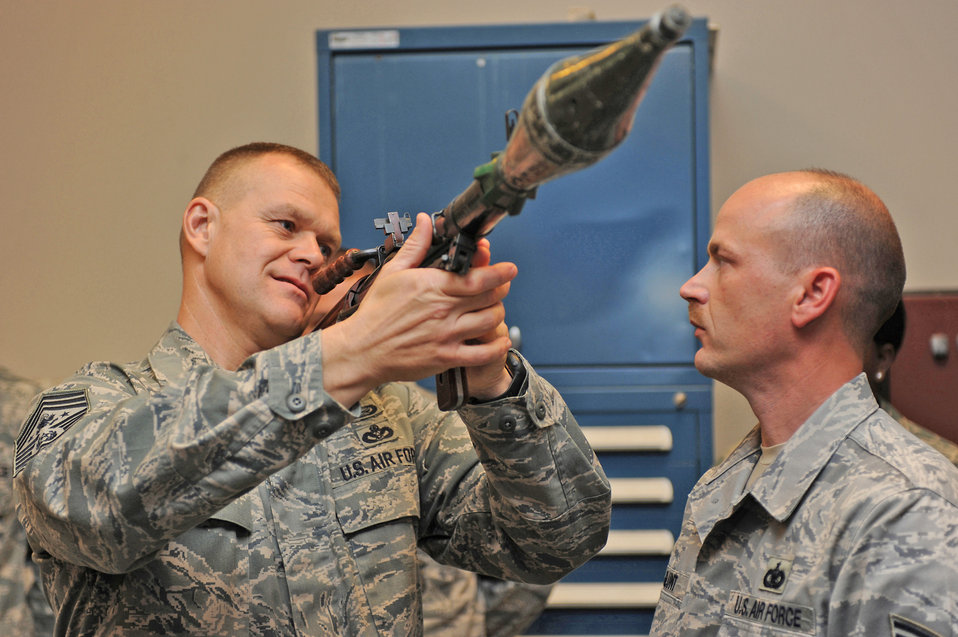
CMSAF visits expeditionary center

Chief Master Sgt. of the Air Force James Roy examines a demonstration weapon as Tech. Sgt. Charles Glunt shows how to use it during a July 29 tour at the U.S. Air Force Expeditionary Center on the Fort Dix section of Joint Base McGuire-Dix-Lakehurst, N.J. Chief Roy visited the U.S. Air Force Expeditionary Center on Fort Dix and McGuire Air Force Base to learn more about expeditionary training and operations in both areas. Sergeant Glunt is assigned to the U.S. Air Force Expeditionary Center armory.